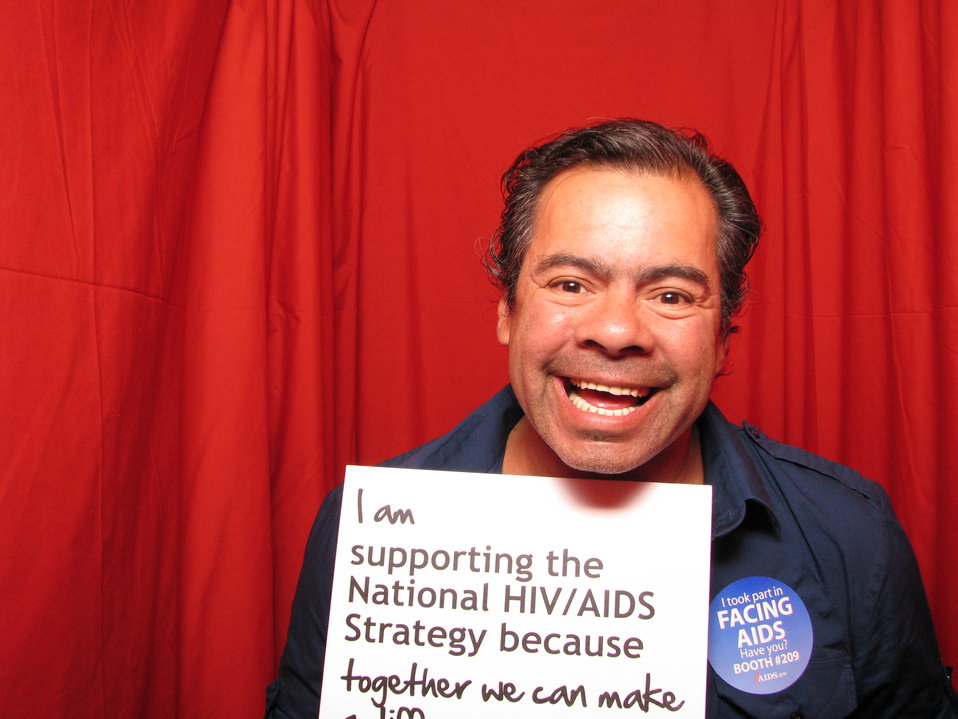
I am supporting the National HIV/AIDS Strategy because together we can make a difference.

From the AIDS.gov photo booth at the U.S. Conference on AIDS, September 2010 (Orlando, FL).